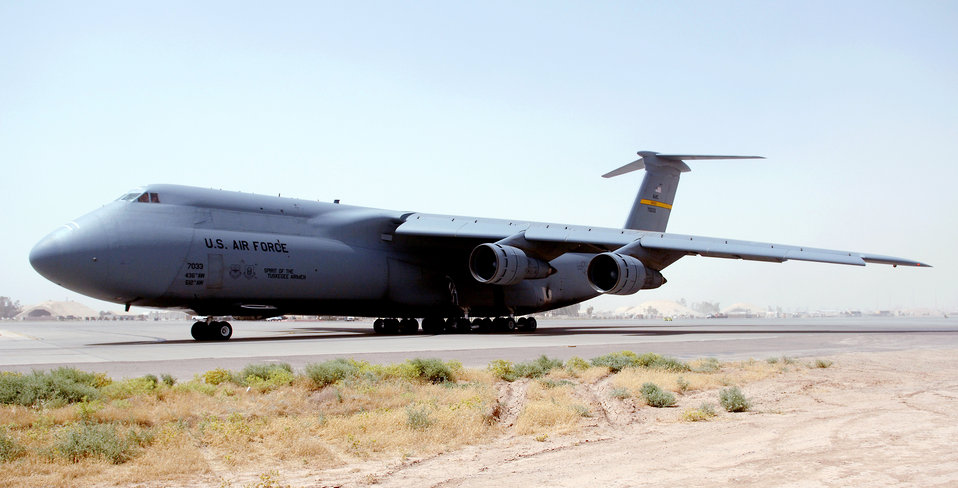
Moving the goods at Balad

A C-5 Galaxy waits for clearance to taxi out on the parking ramp at Balad Air Base, Iraq, on Tuesday, June 6, 2006. The aircraft is from Dover Air Force Base, Del.